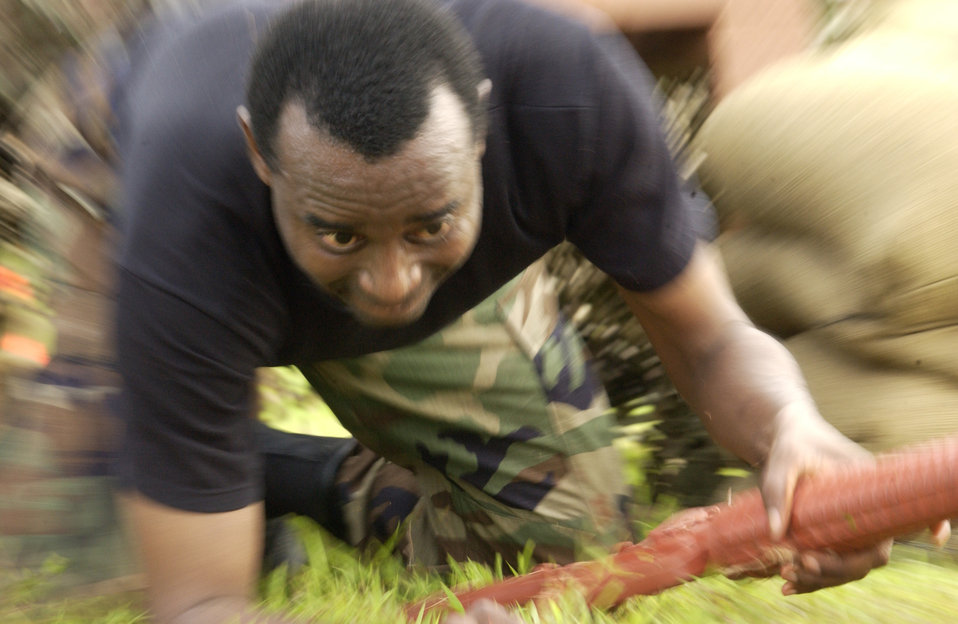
Down with the challenge

ANDERSEN AIR FORCE BASE, Guam -- Tech. Sgt Anthony Cooper navigates through an obstacle course during the Andersen Team Warrior Challenge. The competition is a quarterly moral and readiness building event where participants compete in an obstacle course, knowledge bowl and a 1.5 mile run. Sergeant Cooper is assigned to the 36th Services Squadron.